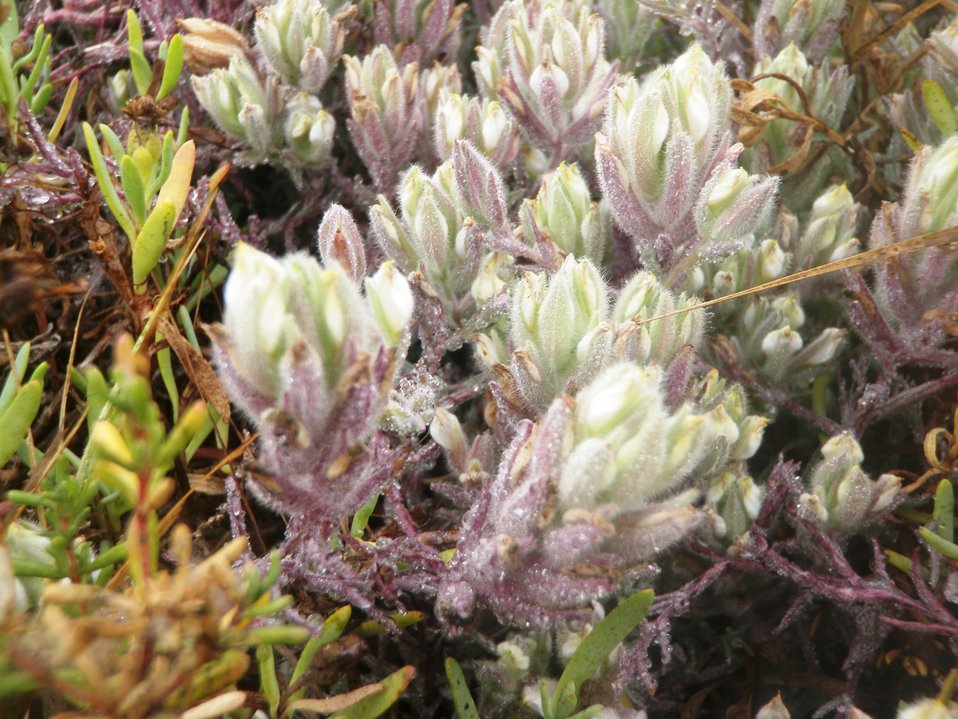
Federally endangered Salt Marsh bird's beak plant

The federally endangered Salt Marsh bird's beak plant.